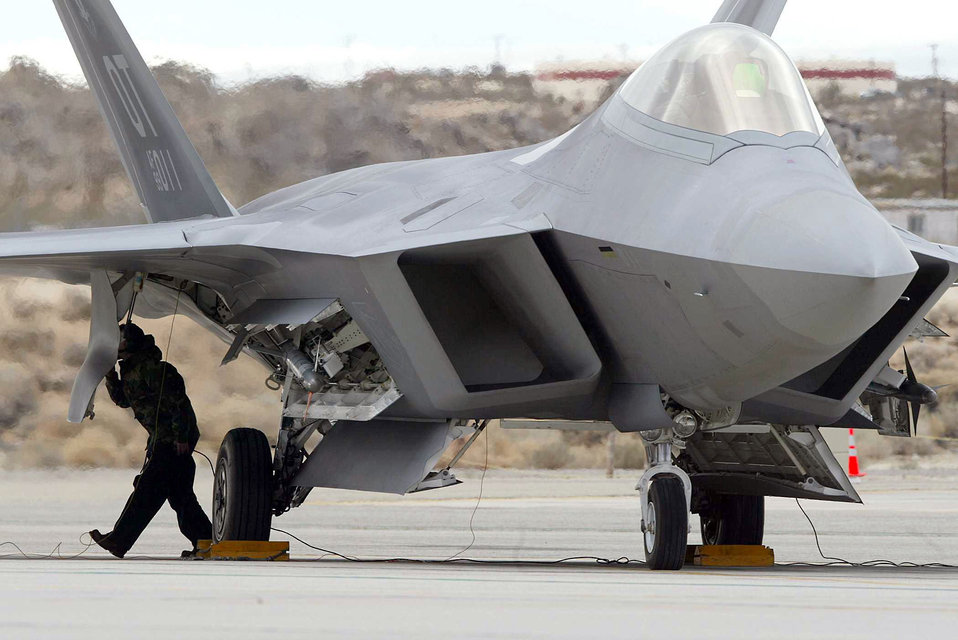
Raptor's first tests

Tech. Sgt. Glenn Lesher performs preflight launch checks on F-22 Raptor 11. The